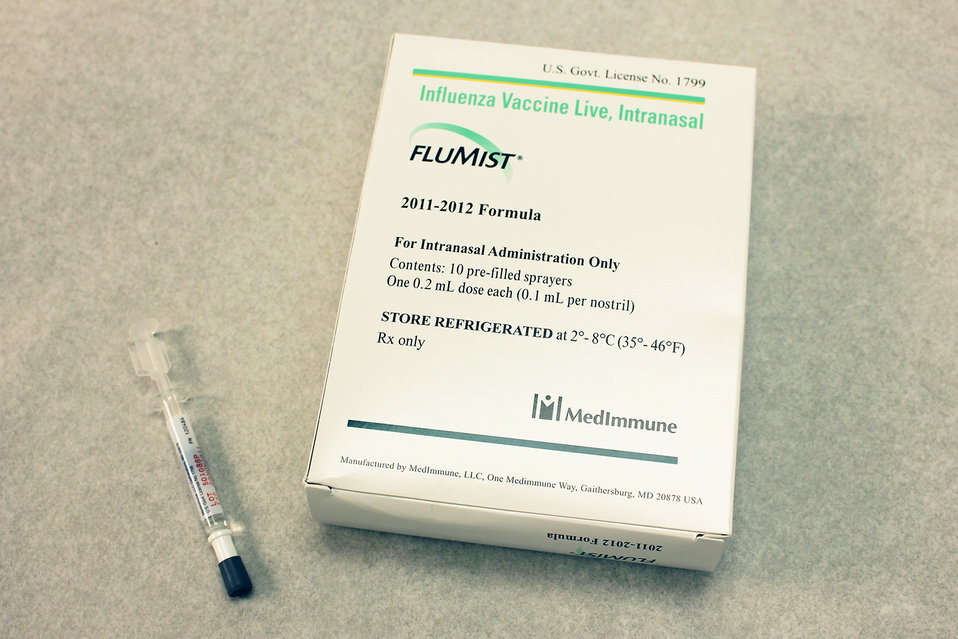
This image depicts a box containing ten prefilled FluMist� live attenuated intranasal vaccine (LAIV) sprayers, along-side of which was a single sprayer, which will be used to deliver the vaccine into the nasal cavity of the recipient. The vaccine contained within this box and sprayer, was manufactured to be used during the 2011 - 2012 flu season, providing immunization against the 2011 - 2012 seasonal influenza viruses.